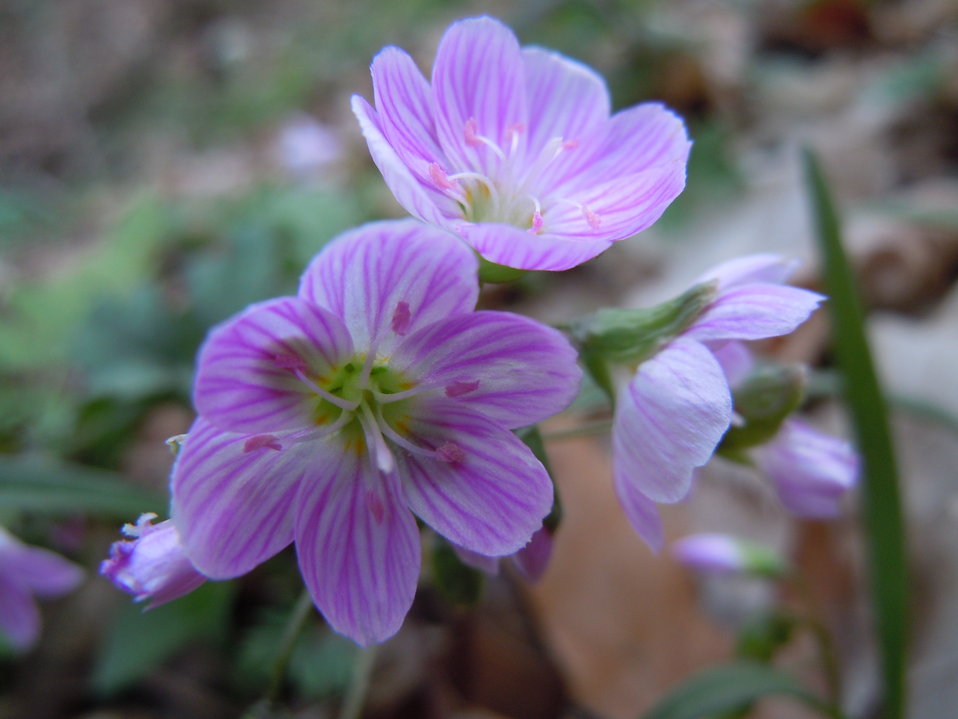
Spring Beauty